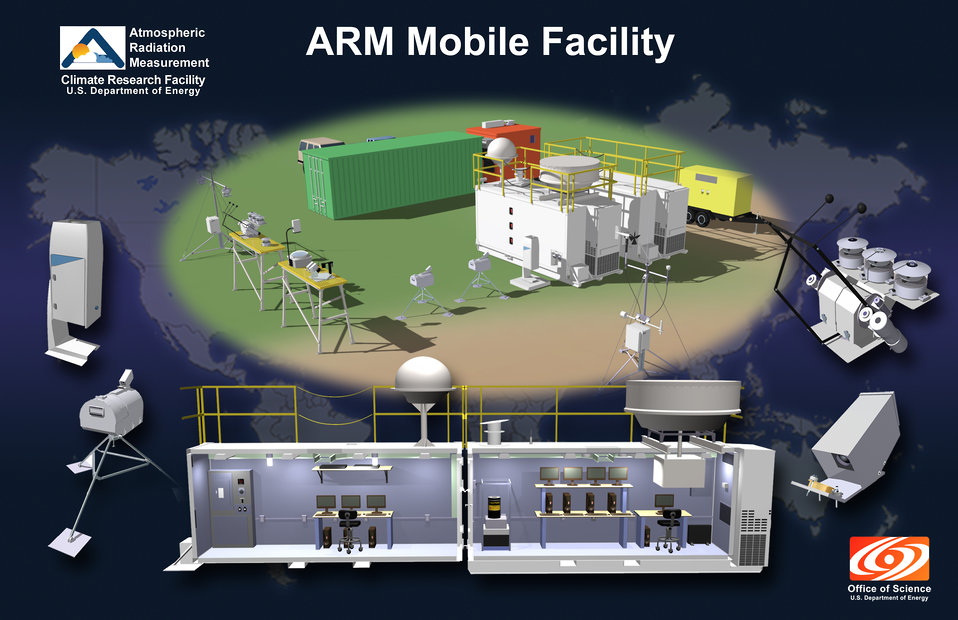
Atmospheric Radiation Measurement (ARM) Mobile Facility.

As part of DOE's ARM Climate Research Facility, the ARM Mobile Facility is a flexible instrument platform consisting of a minimum of two lightweight shelters, a baseline suite of instrument, data communications, and data systems. It is designed for use in atmospheric experiments lasting from 6 to 18 months in any environment, from the cold of the arctic to heat of the tropics.